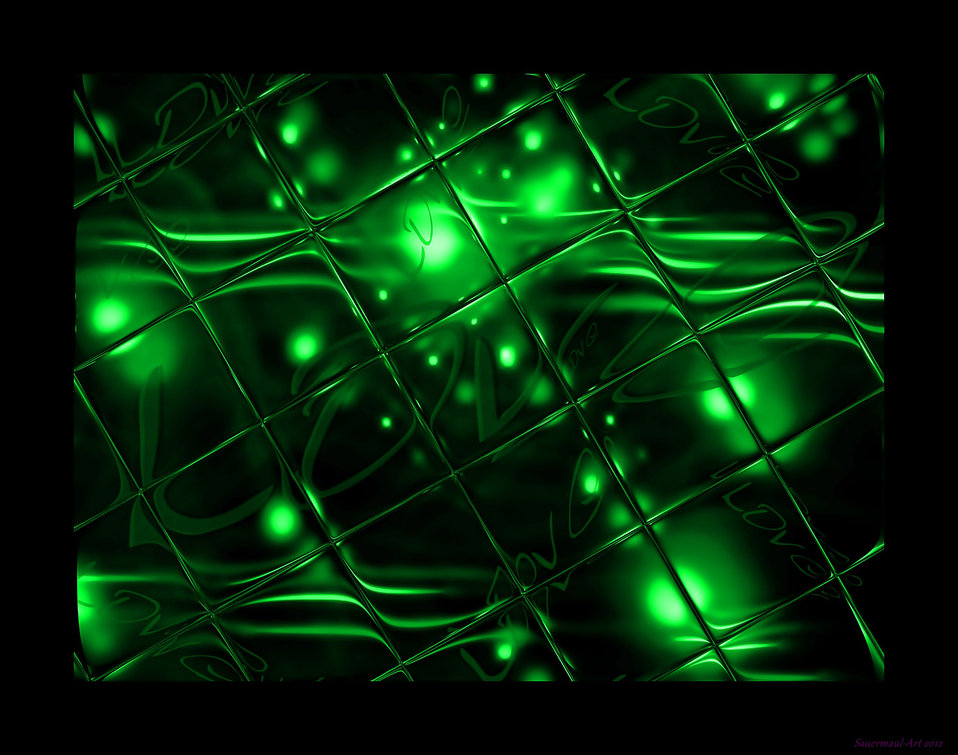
Picture of love in green

Declaration of love.